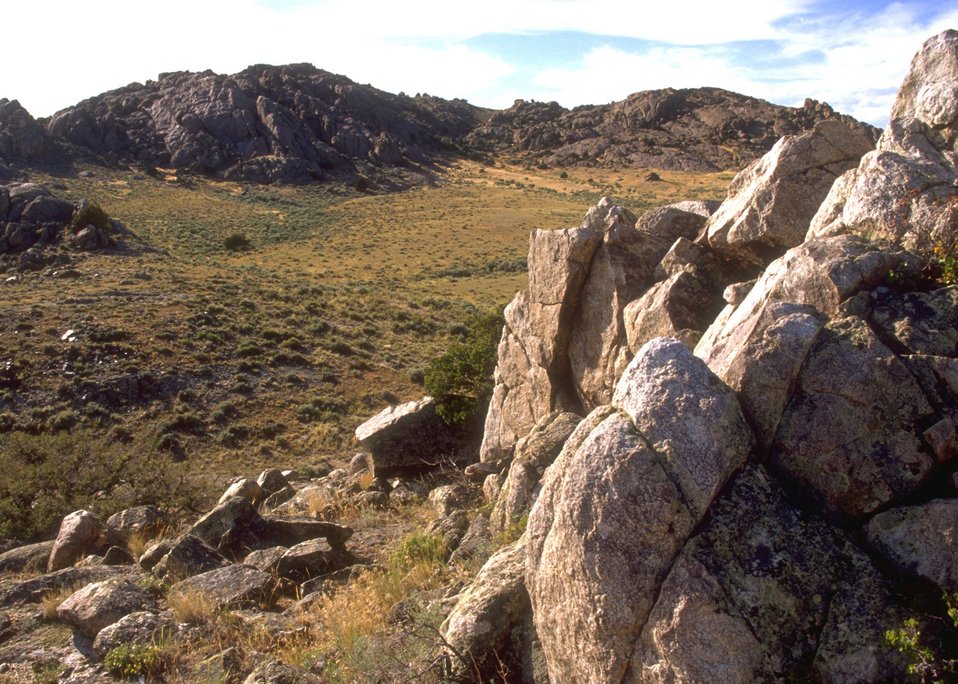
Landscape along the Alcova/Seminoe Back Country Byway, Rawlins Field Office.